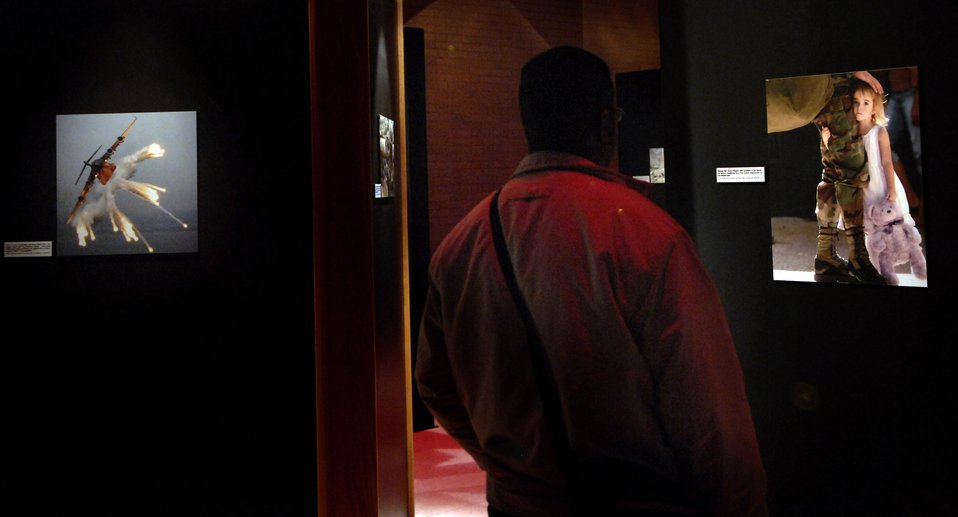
Air Force, military photographers recognized

A patron looks at a photo at the